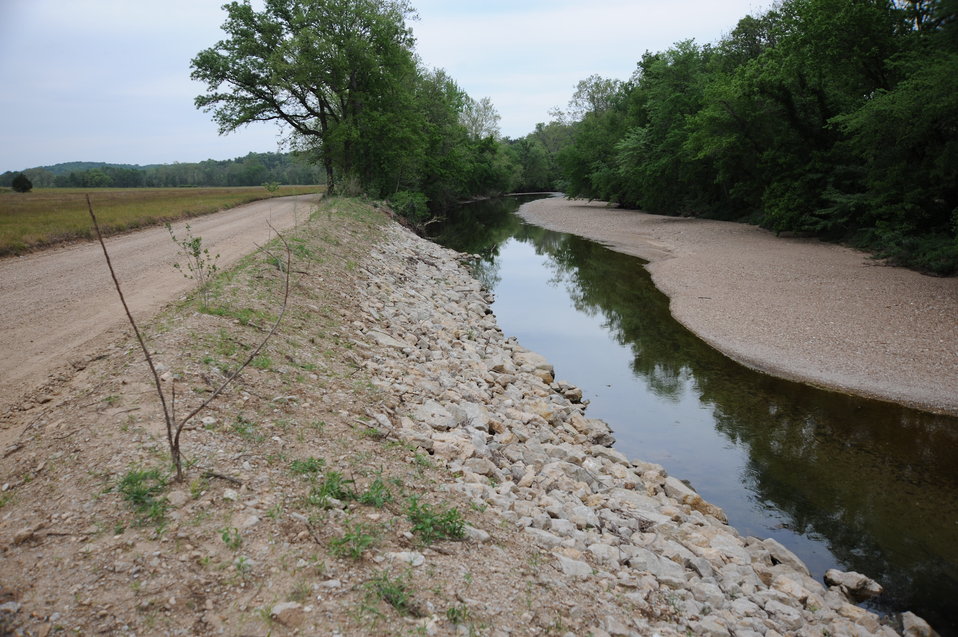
Ambrose Project - Complete

After: riparian corridor three months after completion, looking downstream. The bank was seeded with a native warm season grass and forb mixture and planted with native riparian shrubs and trees.